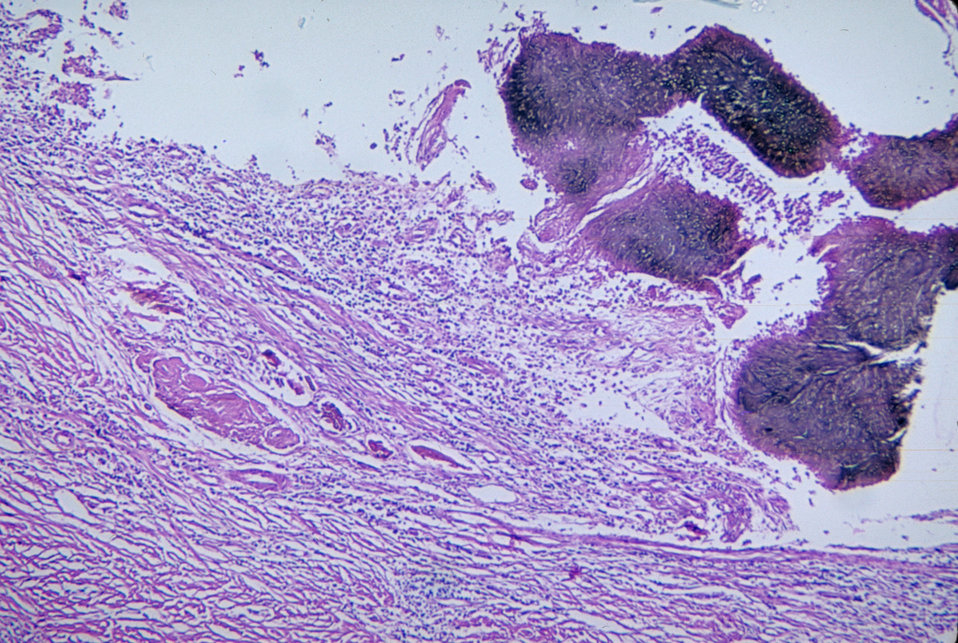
Histopathologic changes of the toe due to Madurella spp., a soil-inhabiting fungal organism.